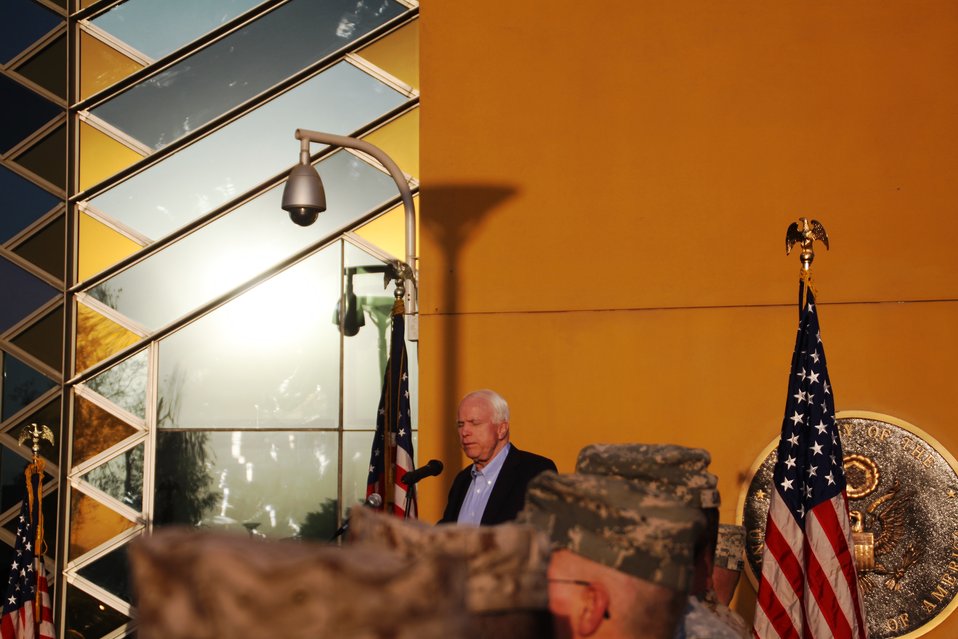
Senator McCain